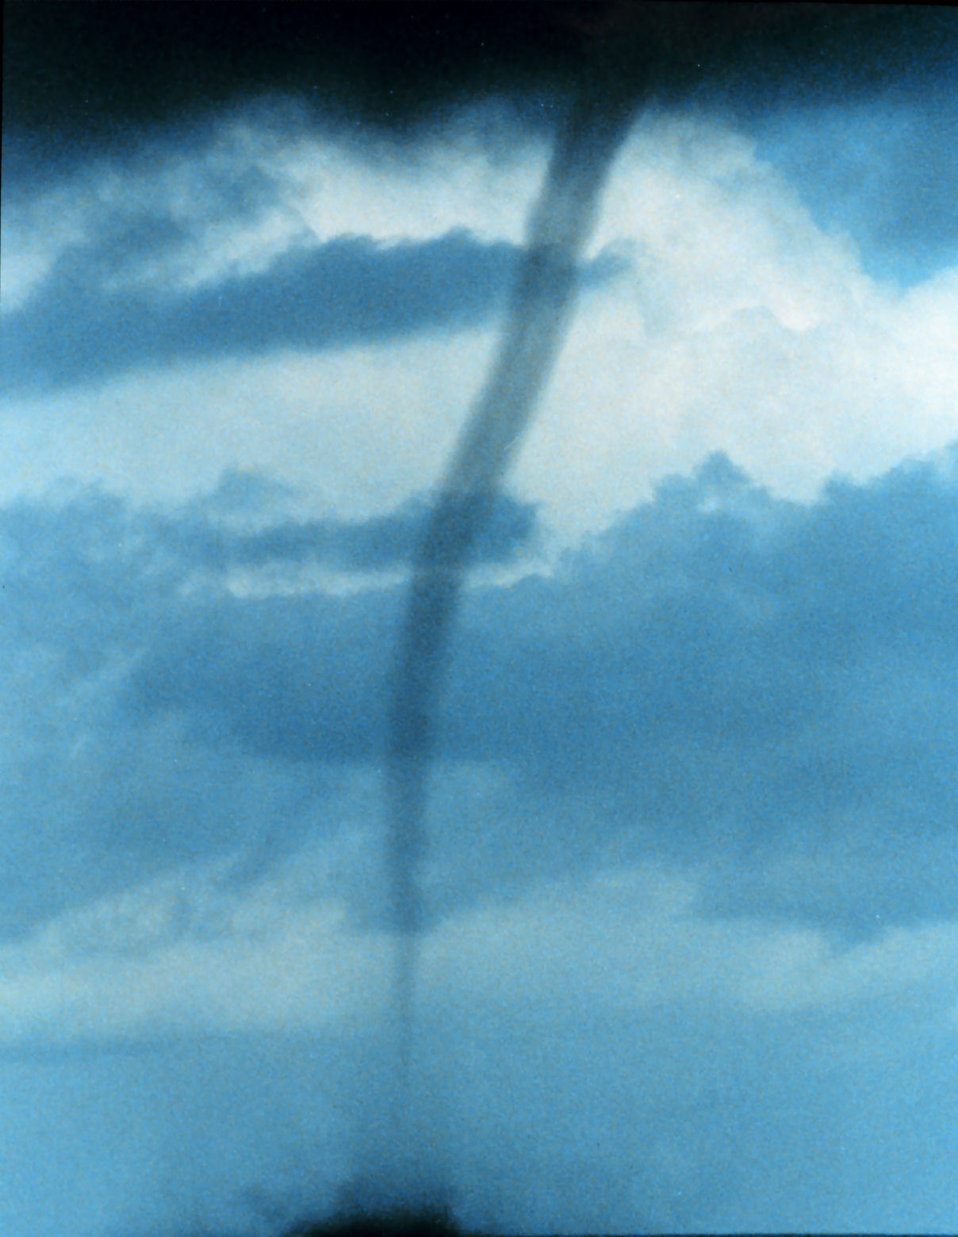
A waterspout in the Gulf of Mexico photographed from the NOAA Ship RUDE